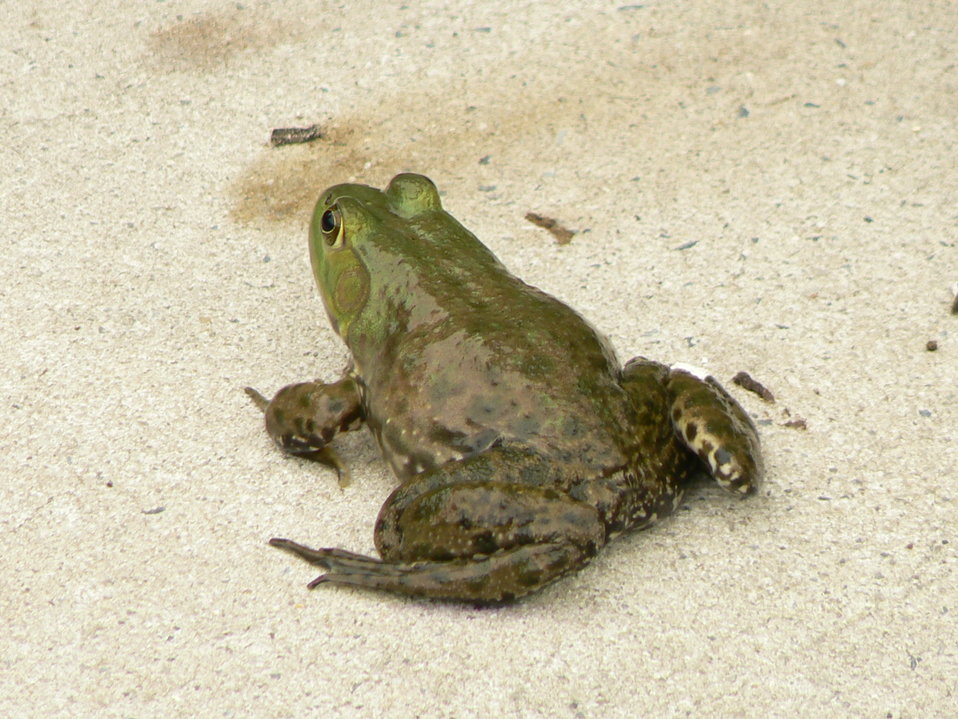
Green Frog

Healthy Green frog at Cape May National Wildlife Refuge.